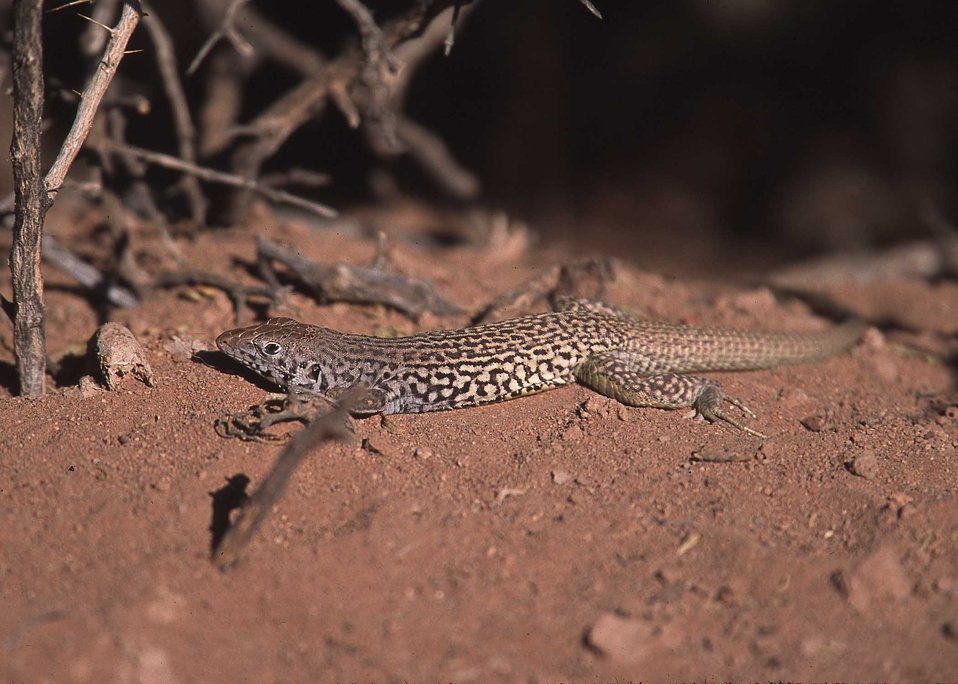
Checkered whiptail Lizard in wildlife habitat area in southern New Mexico.